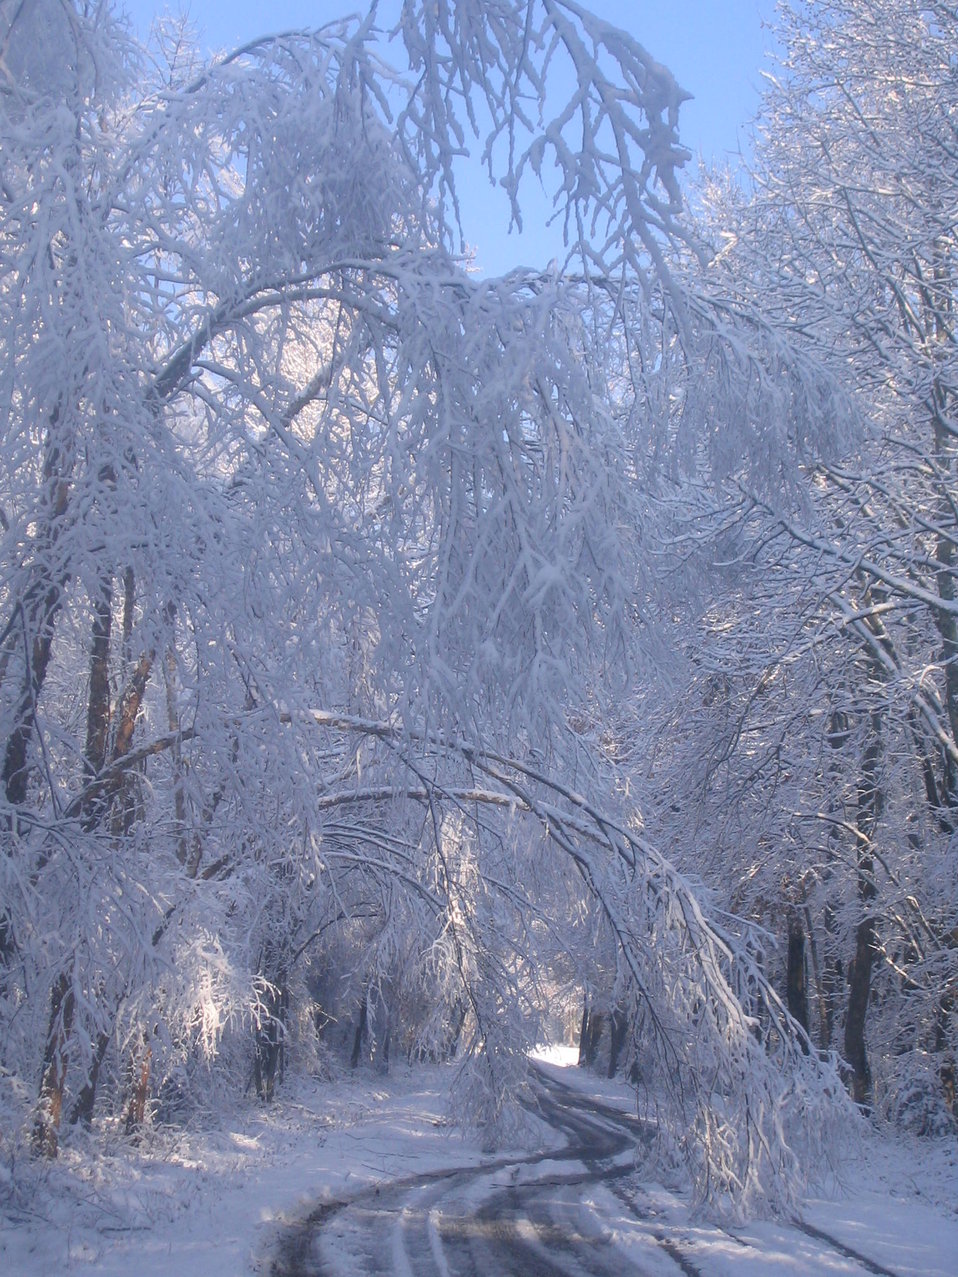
Photo of the Week - Winter at Rappahannock River Valley National Wildlife Refuge

Photo of the Week - 1/19/09

Winter at Rappahannock River Valley National Wildlife Refuge (VA)